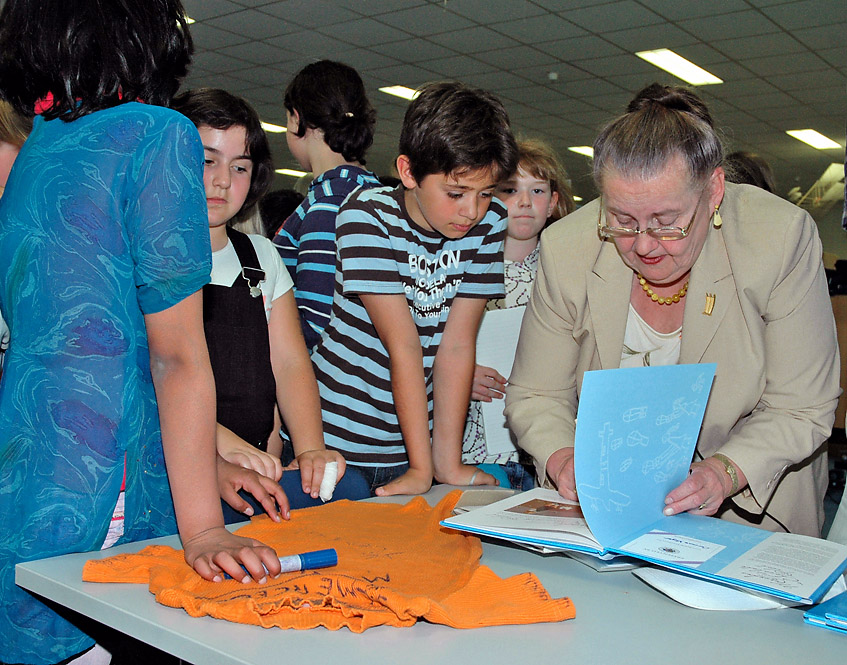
A child of the Berlin Airlift tells her story

Mercedes Wild, the subject of the children's book